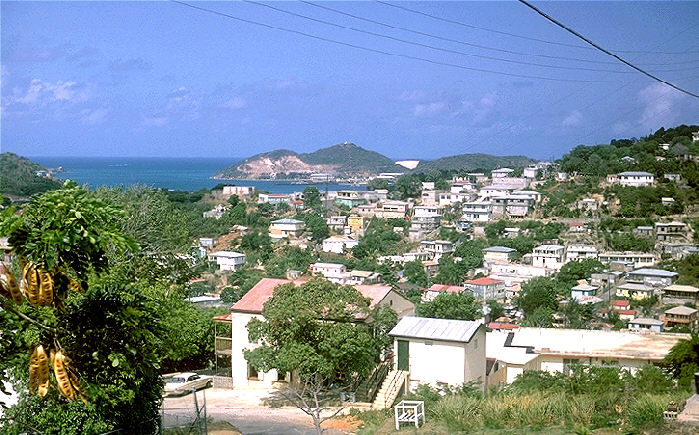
St. Thomas, Virgin Islands.